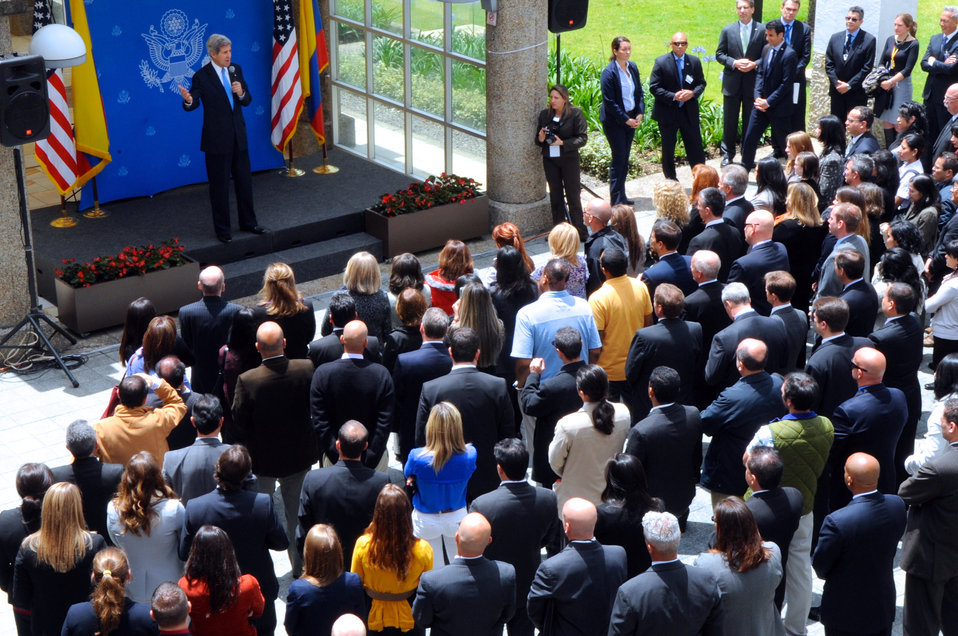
Secretary Kerry Addresses the Staff of Embassy Bogota

U.S. Secretary of State John Kerry addresses the staff of the U.S. Embassy in Bogota during a visit to Colombia on August 12, 2013.